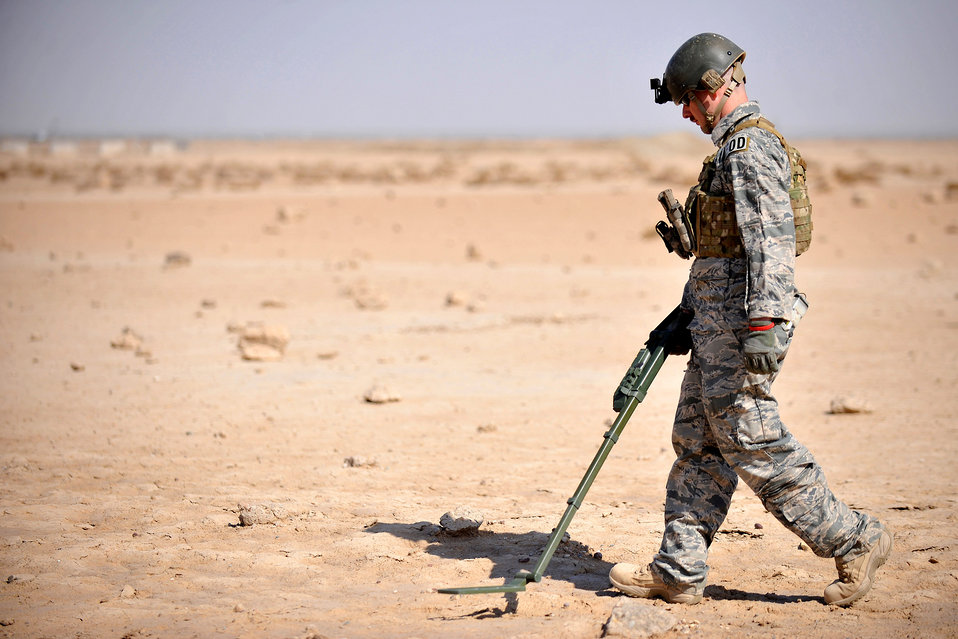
EOD Airmen

Staff Sgt. Glenn Henthorn scans the ground with a mine and metal detector during a training exercise March 3, 2011, at Ali Air Base, Iraq. Sergeant Henthorn is an explosive ordnance disposal team chief assigned to the 407th Expeditionary Operations Support Squadron.